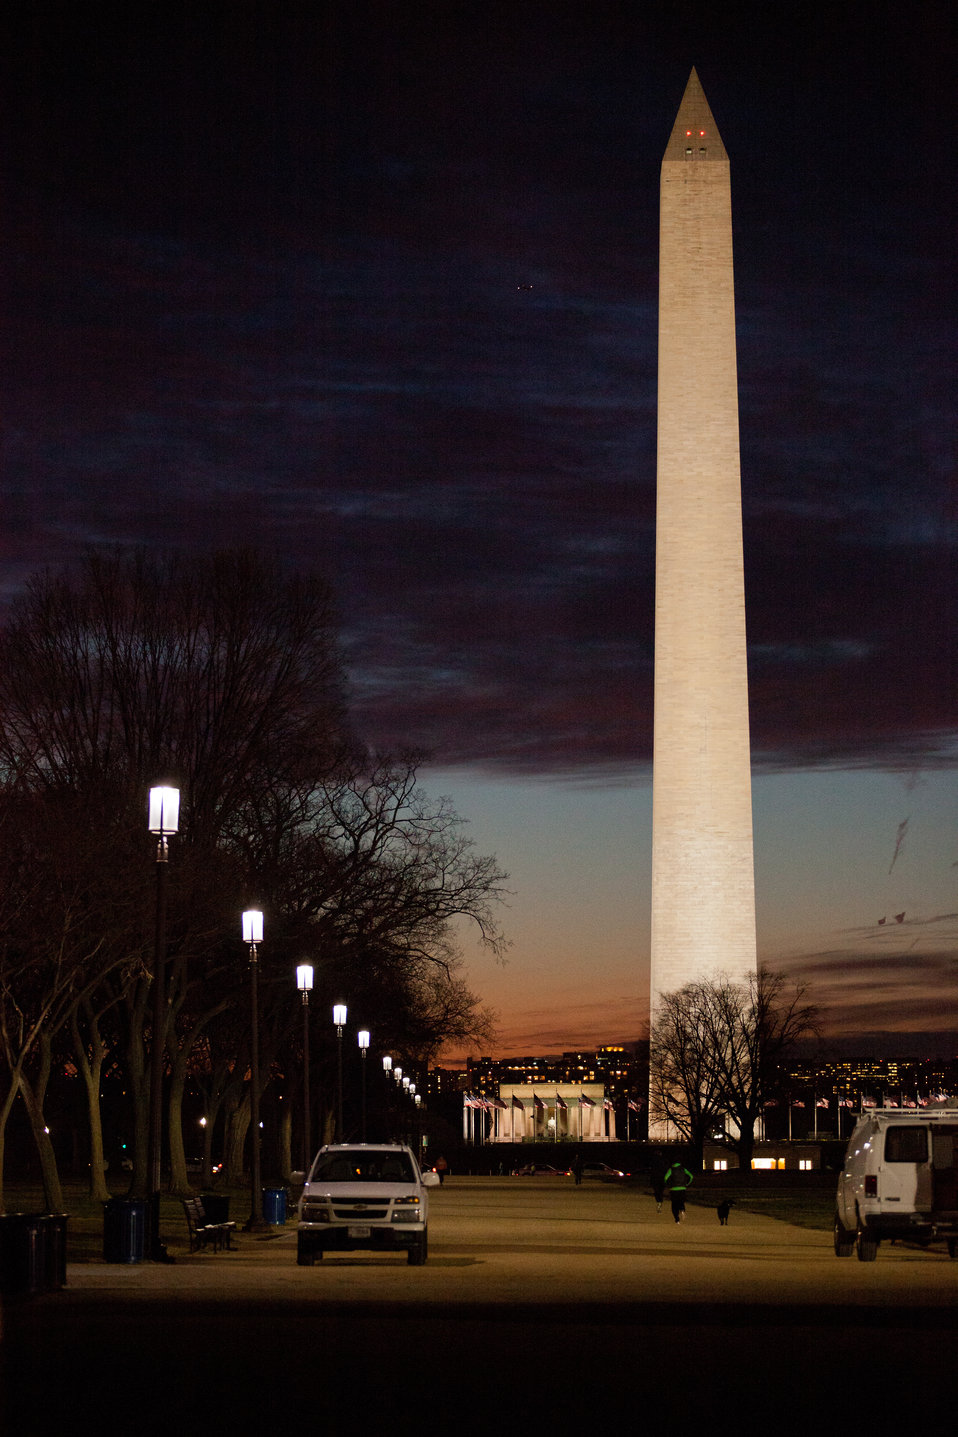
The Washington Monument with LED lighting int he foreground